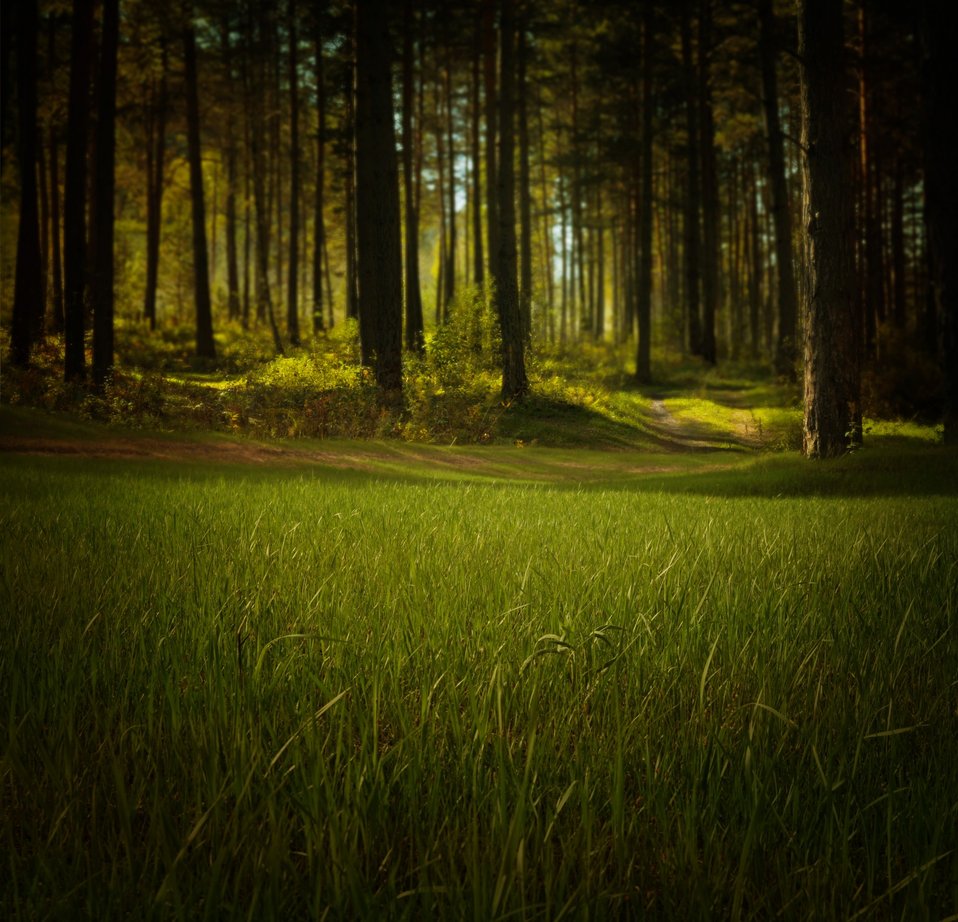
Mysterious forest

Background with a mysterious fairy forest.